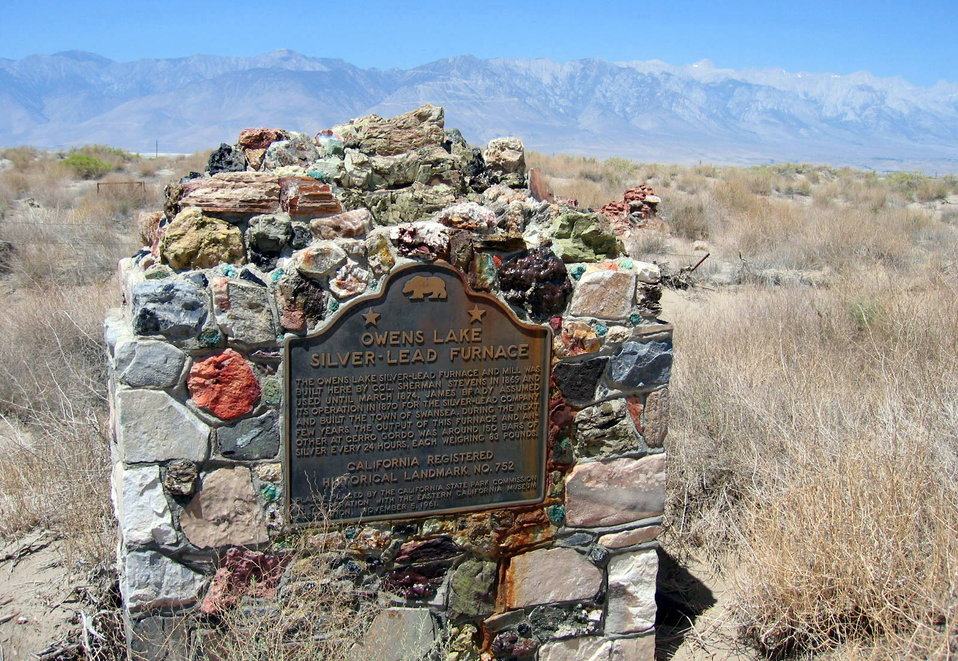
California Historical Landmark Marker #752 marking the site of the Owens Lake Silver-Lead Furnace in Swansea.